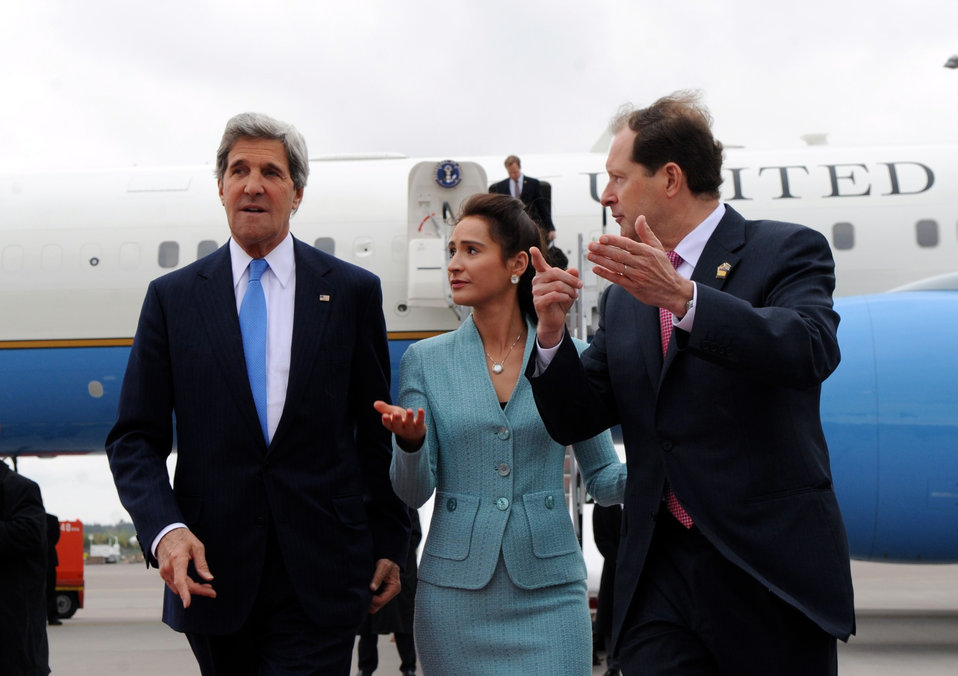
Secretary Kerry Arrives in Stockholm, Sweden

U.S. Secretary of State John Kerry is greeted by U.S. Ambassador to Sweden Mark Brzezinski and his wife upon arriving in Stockholm, Sweden, on May 14, 2013.